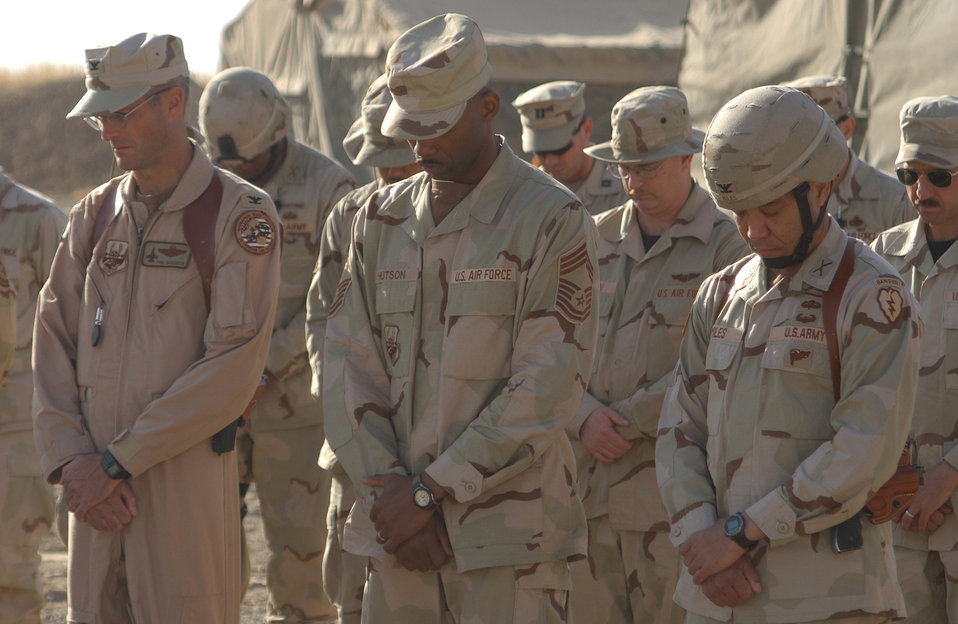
Moment of silence

KIRKUK AIR BASE, Iraq -- Col. Phillip Murdock, 506th Air Expeditionary Group Commander, Chief Master Sgt. Clarence Hutson, 506th Air Expeditionary Group Superintendent, and Col. Lloyd Miles, 2nd Brigade Commander, observe a moment of silence at the remembrance ceremony here Sept. 11.